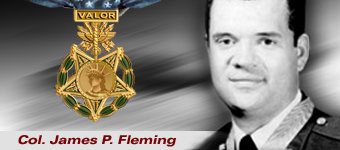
Col. James Fleming

Col. James P. Fleming, Medal of Honor recipient.